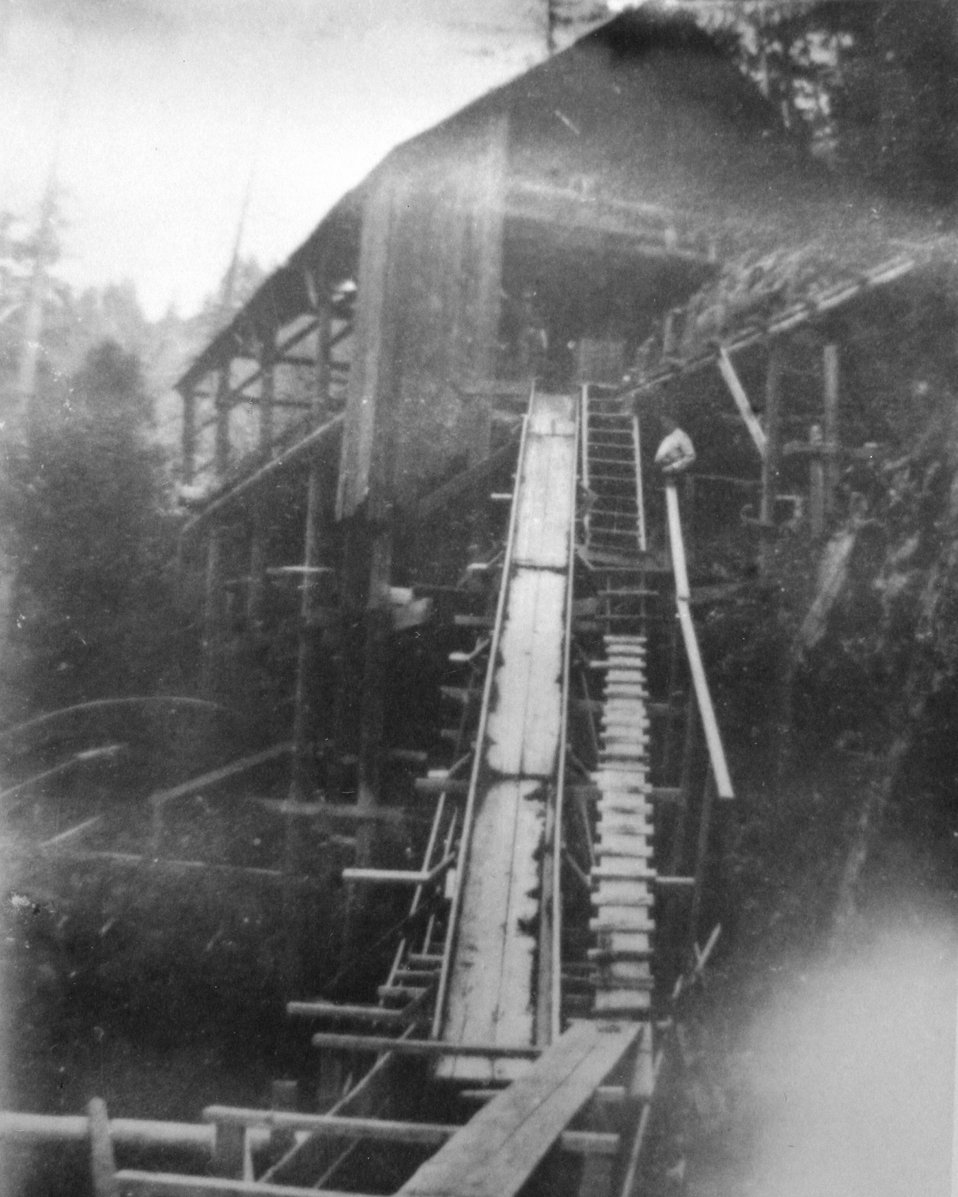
Red River Mining and Milling Co. saw mill for sluice contruction.